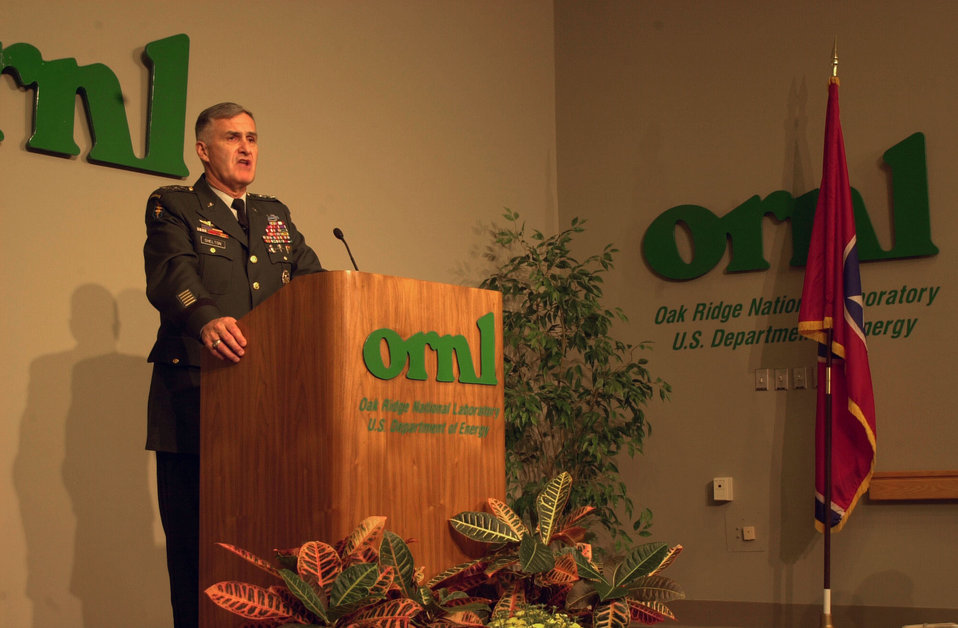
Gen. Shelton Visit to Oak Ridge National Lab. ORNL

00-377-0610 DOE photo by Lynn Freeny 2000 Oak Ridge Tennessee